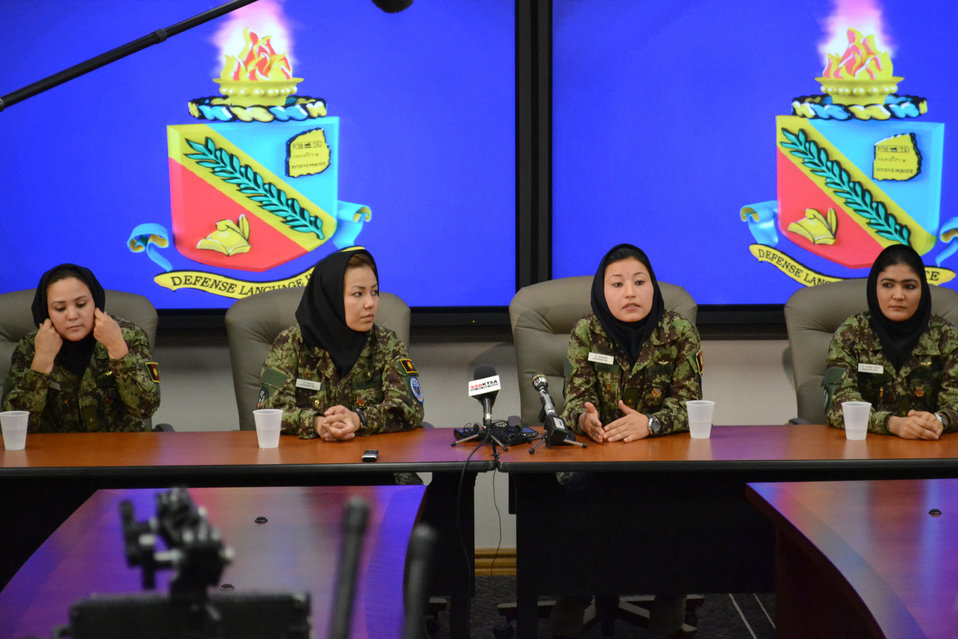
Afghan helicopter pilot candidates

Four Afghan helicopter pilot candidates attend a press conference July 13, 2011, at the Defense Language Institute English Language Center at Lackland Air Force Base, Texas. The women begin their English language studies at the DLIELC, marking a significant milestone in shaping the reconstruction of Afghanistan.